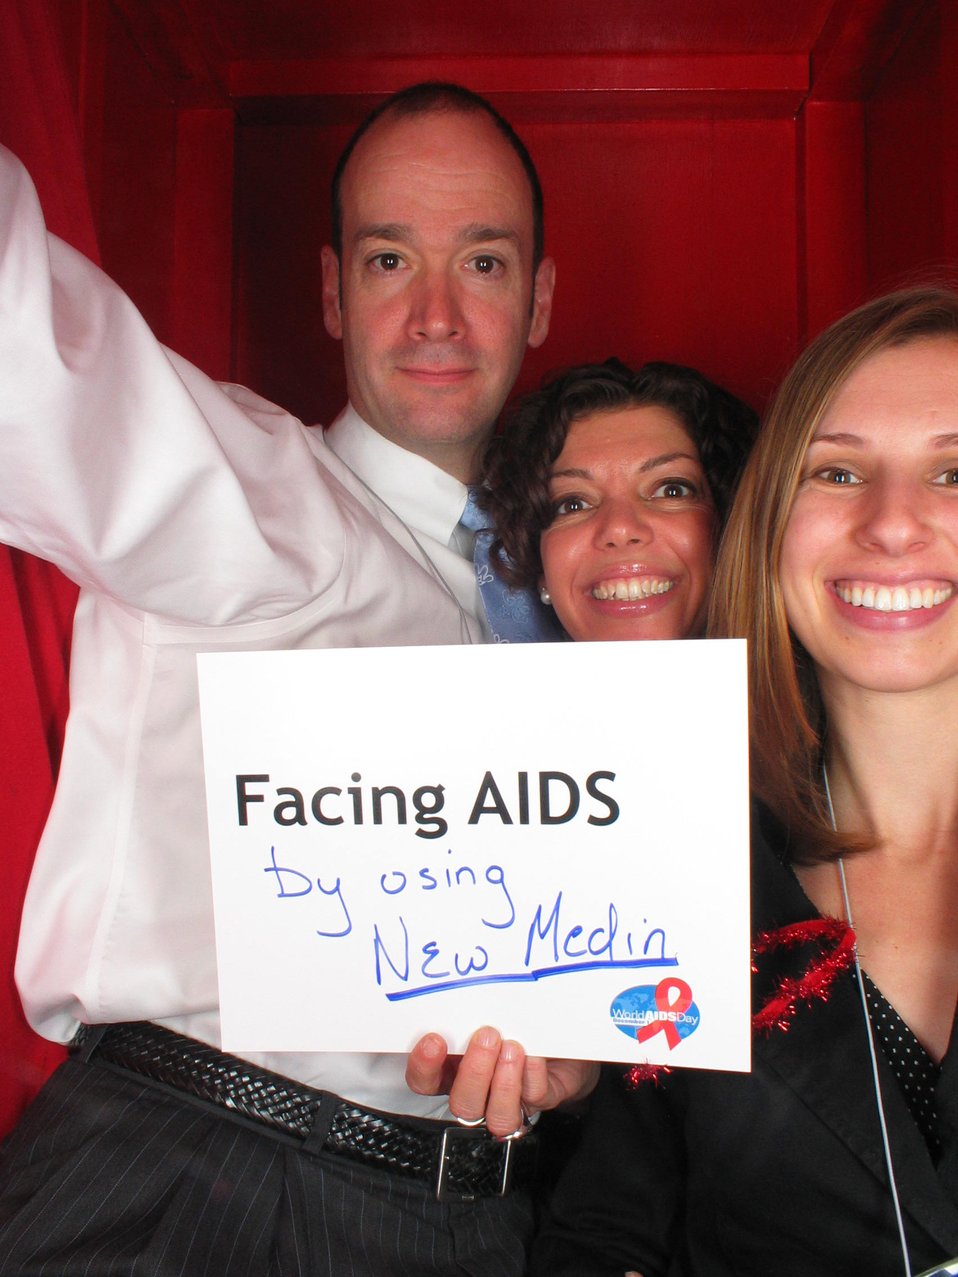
Facing AIDS by using new media.